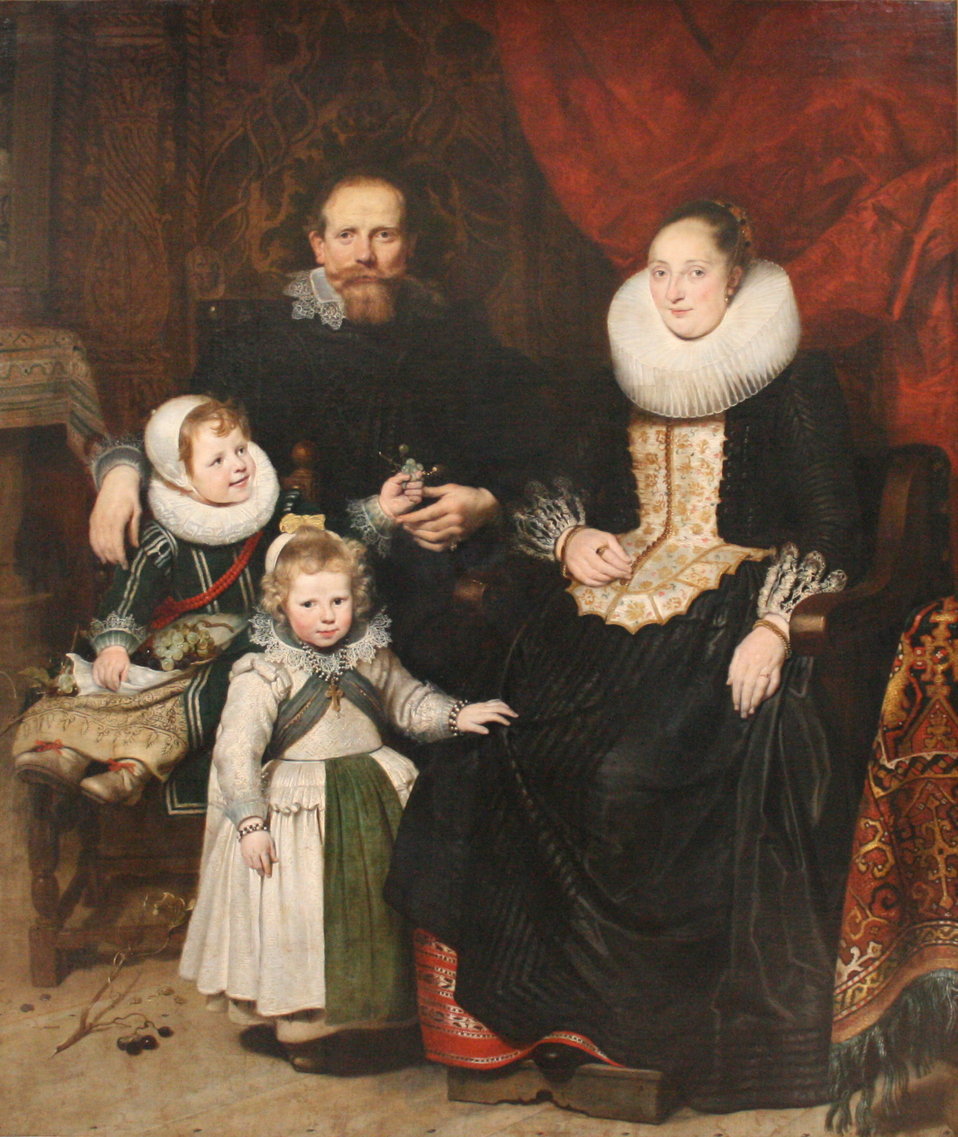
'Zelfportret van de kunstenaar en zijn familie' Cornelis de Vos